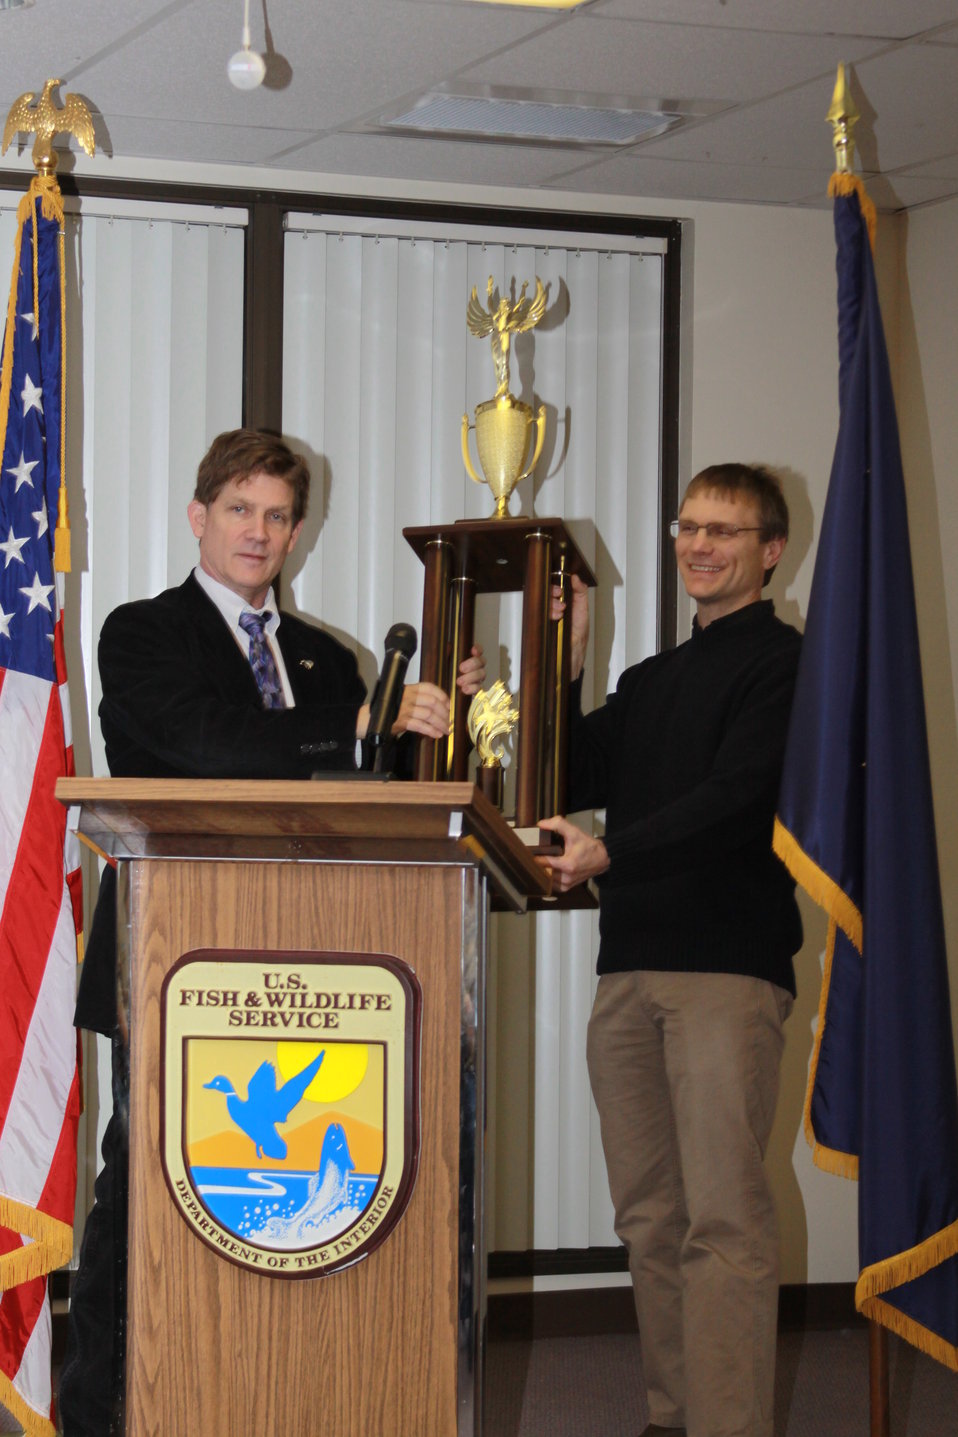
Fish Passage award

Bill Rice accepts the National Fish Passage Program Field Biologist of the Year award from the U.S. Fish and Wildlife Service’s Regional Director, Geoff Haskett, on behalf of David Hoskins, Assistant Director of Fisheries and Aquatic Conservation for the Service. USFWS/Rose Primmer